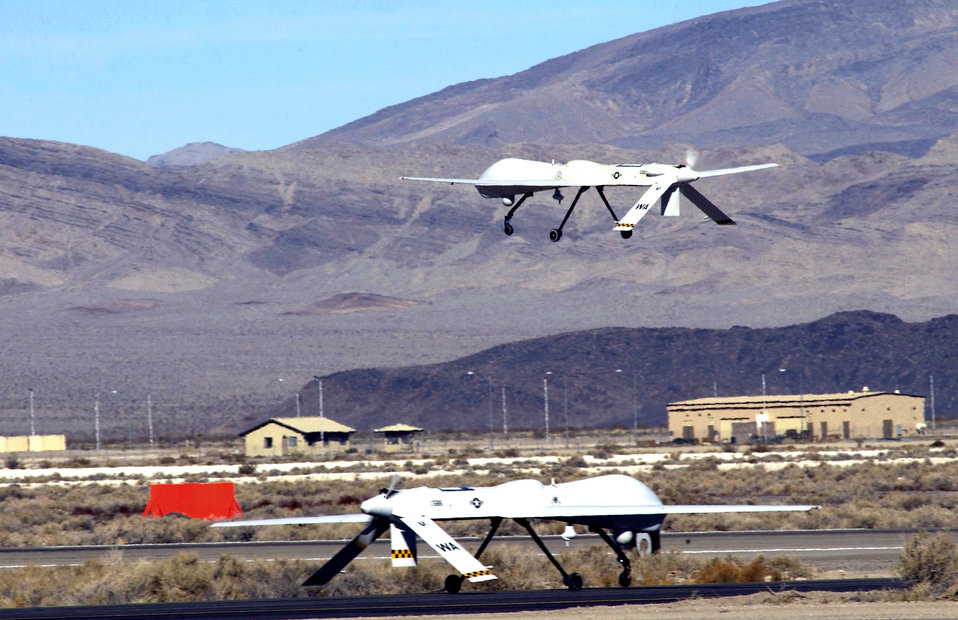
Predators fly first ever four-ship sorties

CREECH AIR FORCE BASE, Nev. -- An MQ-1 Predator takes off from here during the first operational test of the latest upgrade to the Predator. The upgrade, known as the Multi-Aircraft Control system enables an operator to fly two-ship and four-ship Predator sorties. Testers performed two-ship sorties Sept. 12 and 13 and progressed to four-ship sorties Sept. 14 and 15.